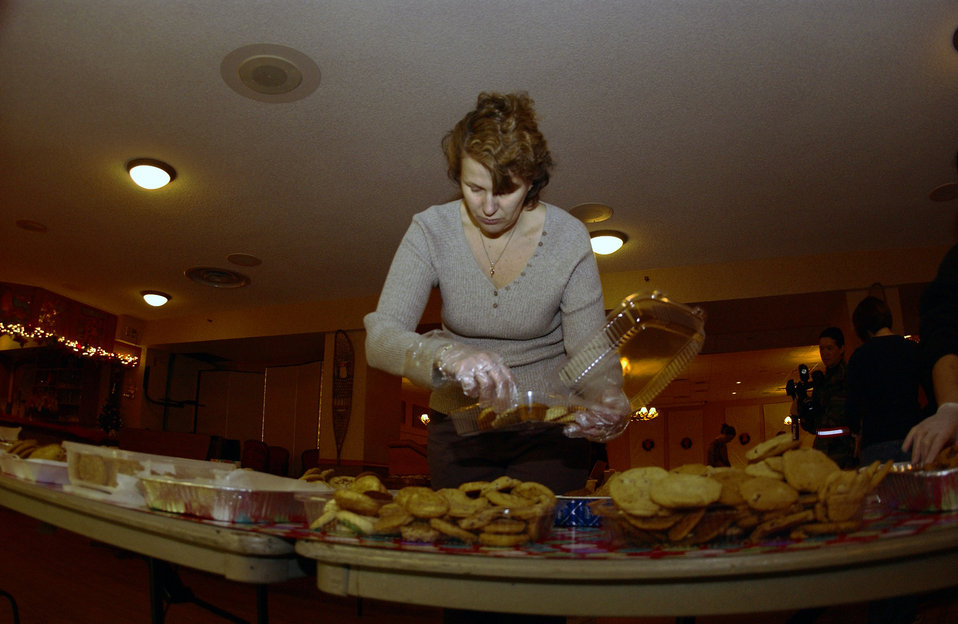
Cookie drive delivers holiday warmth during Alaskan winter

Brenda Lee Restey boxes cookies Dec. 14 at the Yukon Club at Eielson Air Force Base, Alaska. The boxed cookies will be delivered via squadron first sergeants to single Airmen living in Eielson AFB's dormitories. The holiday gesture is part of Operation Cookie Crunch, a yearly event organized and sponsored by the Eielson Officer's Spouses Club. Mrs. Restey is the wife of Col. Michael Restey, who is with the 354th Medical Group and currently deployed to Southwest Asia.